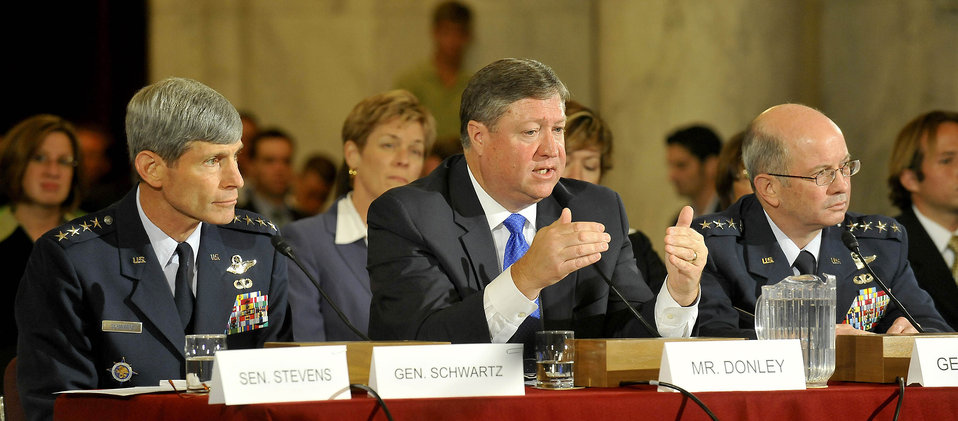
Senate confirmation hearing for Air Force leaders

Michael B. Donley, center, with Gen. Norton A. Schwartz (left) and Gen. Duncan J. McNabb, testifies July 22 before the Senate Armed Services Committee during hearings to examine their nominations for three key posts. Mr. Donley is being reviewed for secretary of the Air Force, General Schwartz for chief of staff and General McNabb for commander of U.S. Transportation Command.